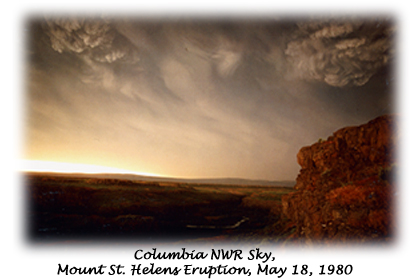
Sky after Mount St. Helens eruption, May 18, 1980 - Columbia NWR

The most recent event to dramatically shape the geology and landscape of the refuge occurred just a few decades ago. On May 18, 1980, Mount St. Helens, located 150 miles southwest of the refuge, erupted violently, sending a cloud of volcanic ash over eastern Washington and turning day into night. A heavy layer of powdery ash settled on the refuge, varying in depth from 1 inch on the southern areas to 2 inches near the north. The ash flattened vegetation and suffocated many terrestrial insects, creating food shortages for other wildlife. Over the years, the ash layer has eroded and been incorporated into the soil but is still evident throughout the refuge.